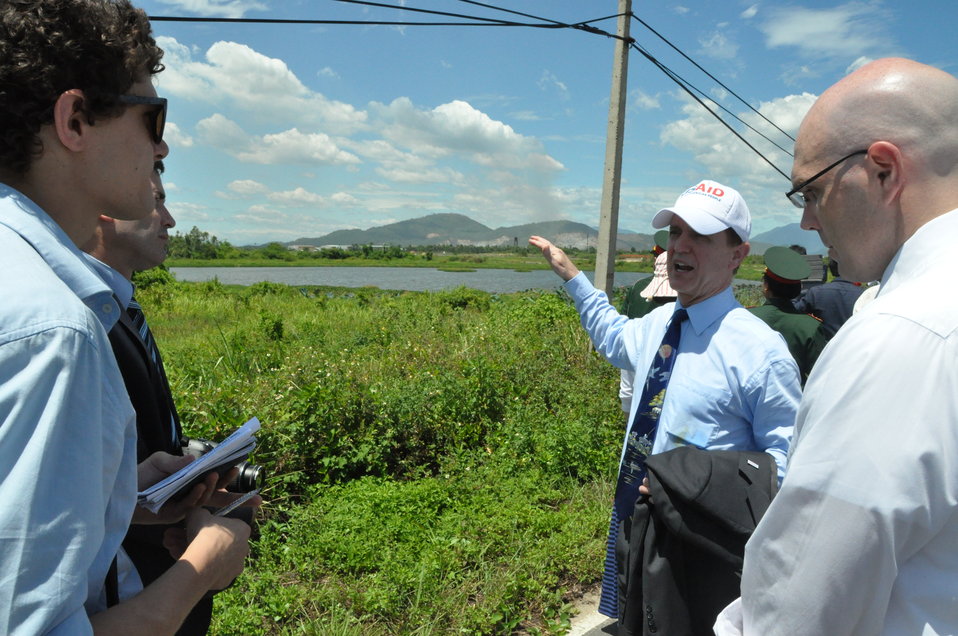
USAID Mission Director Francis Donovan explains the site at the Environmental Remediation of Dioxin Contamination at Danang Airport Project Launch

August 9, 2012